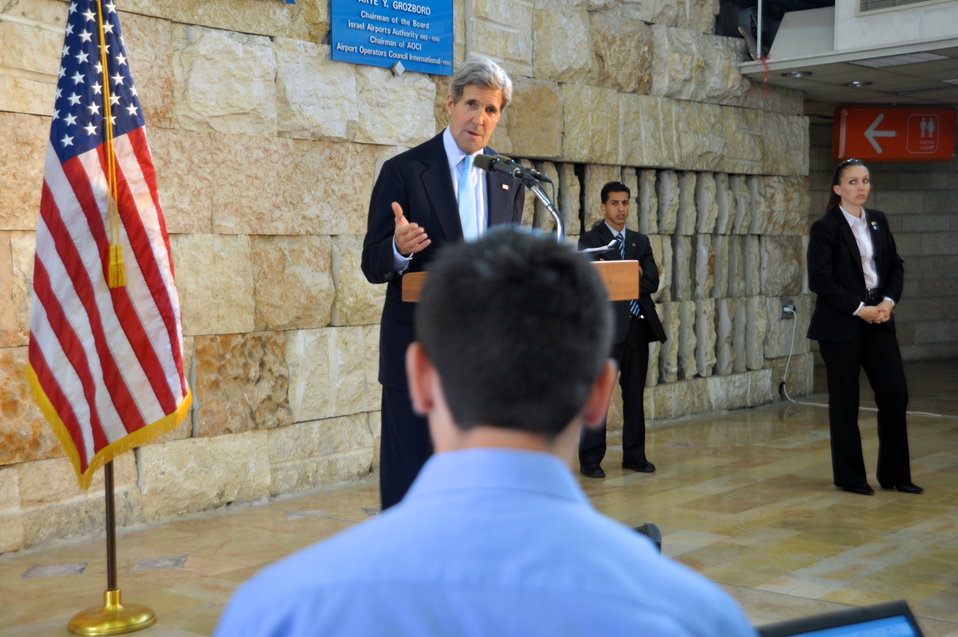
Secretary Kerry Responds to an Israeli Journalist

U.S. Secretary of State John Kerry answers a question from an Israeli reporter during a news conference in Tel Aviv, Israel, on June 30, 2013.